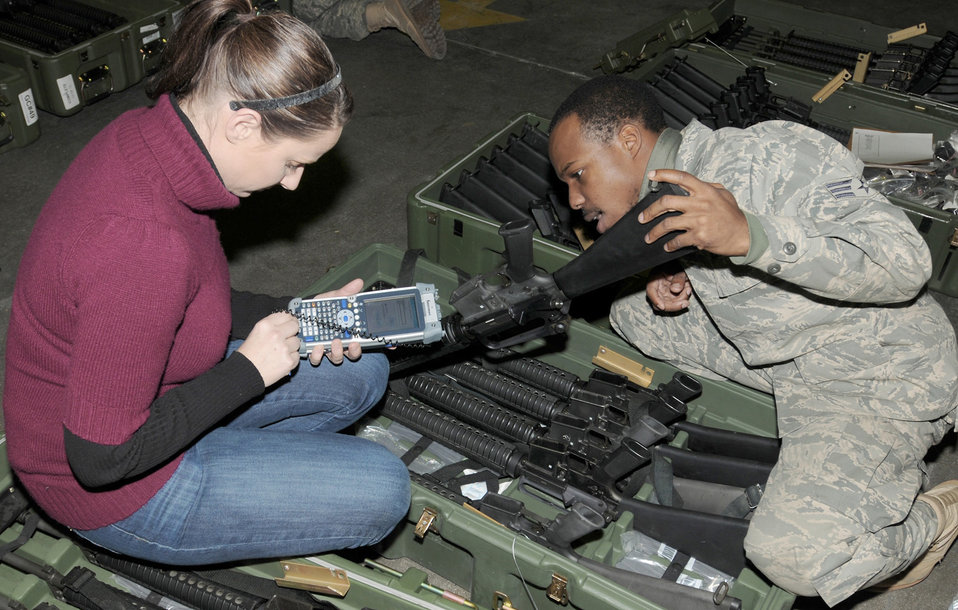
Aviano begins AMT

Lorae Gudgel and Senior Airman Rashon Forbes scan a barcode on a weapon for inventory Dec. 17, 2010, as part of the new asset marking and tracking system being implemented at Air Force installations around the world. Each piece of equipment is being marked with a unique bar code that, when scanned, will provide the serial number and equipment information, including what the piece of equipment is, to which base it belongs and to whom it has been issued. Ms. Gudgel is a marking technician with A2B Company. Airman Forbes is a document control technician with the 31st Logistics Readiness Squadron.